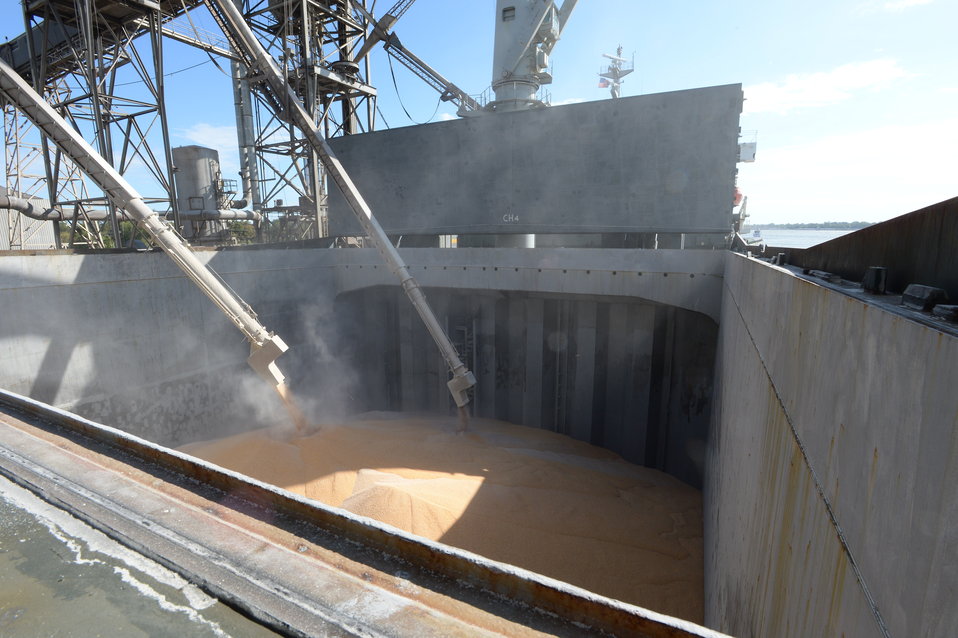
Grain is transferred from barges to to storage facilities near the Port of New Orleans in New Orleans, LA on Tuesday, Nov. 19, 2013.